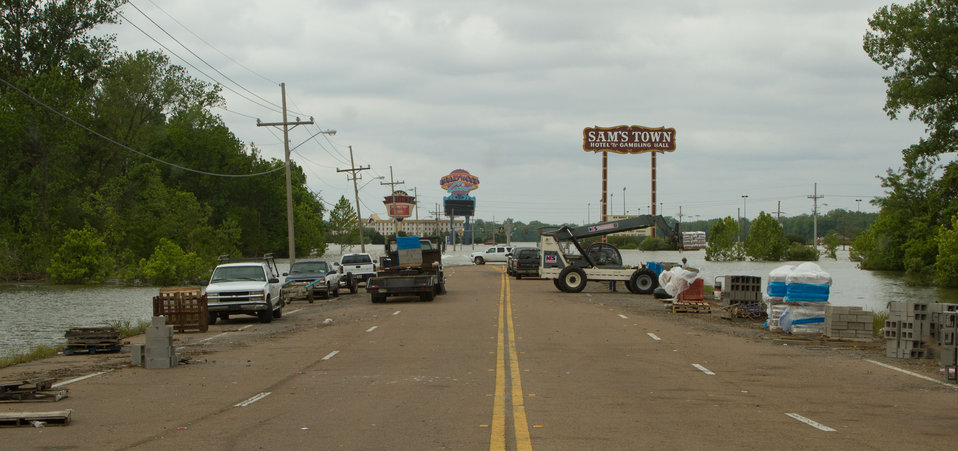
Mississippi River floods waters inundate casinos and the farms that surround them in Tunica, MS on Sunday, May 15. 2011. Security and support crews work from here to ferry essential staff to and from the casinos.